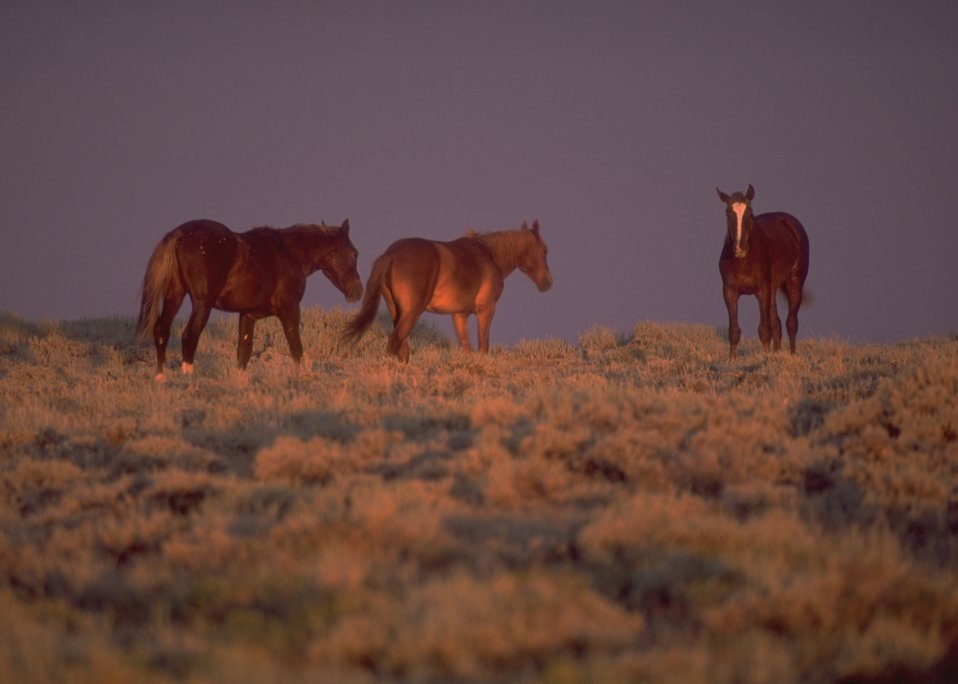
Wild horses, Rock Springs Field Office.